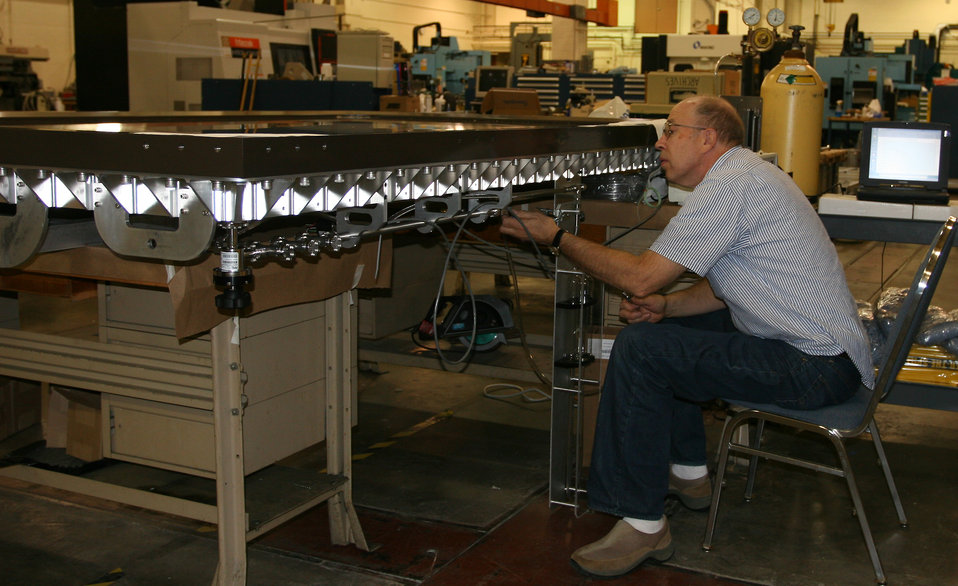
Waldseemüller map case

Retired NIST physicist Charles Tilford, a consultant to the Library of Congress, attaches apparatus to replace air in the encasement with inert argon gas to help preserve the map.